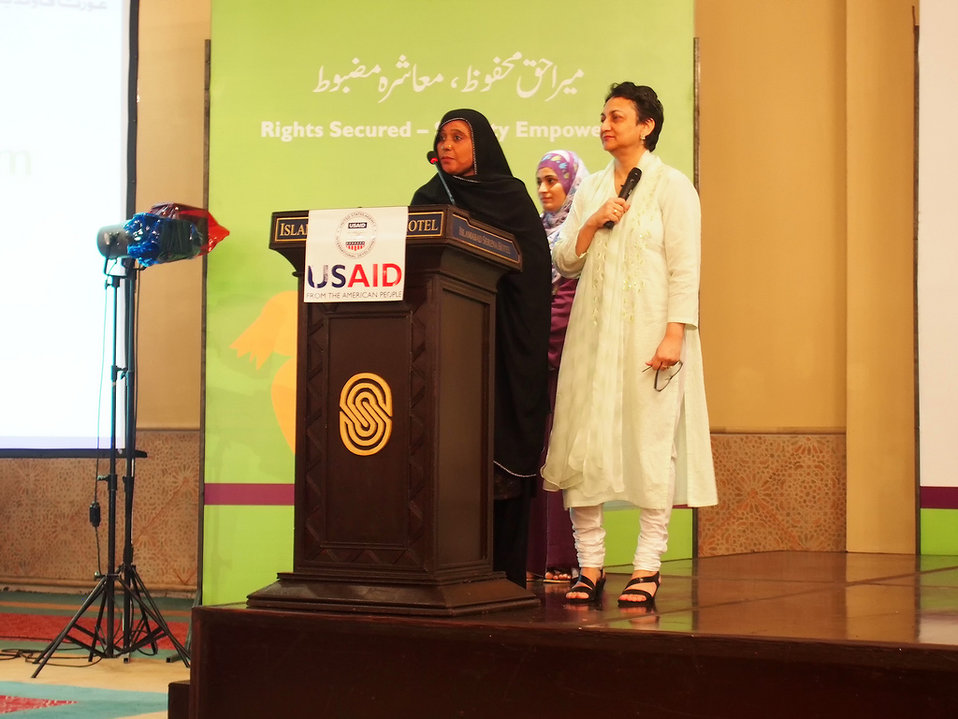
Gender Equity Program, Pakistan

USAID and Aurat Foundation annual event in Islamabad, Sept. 20, 2013